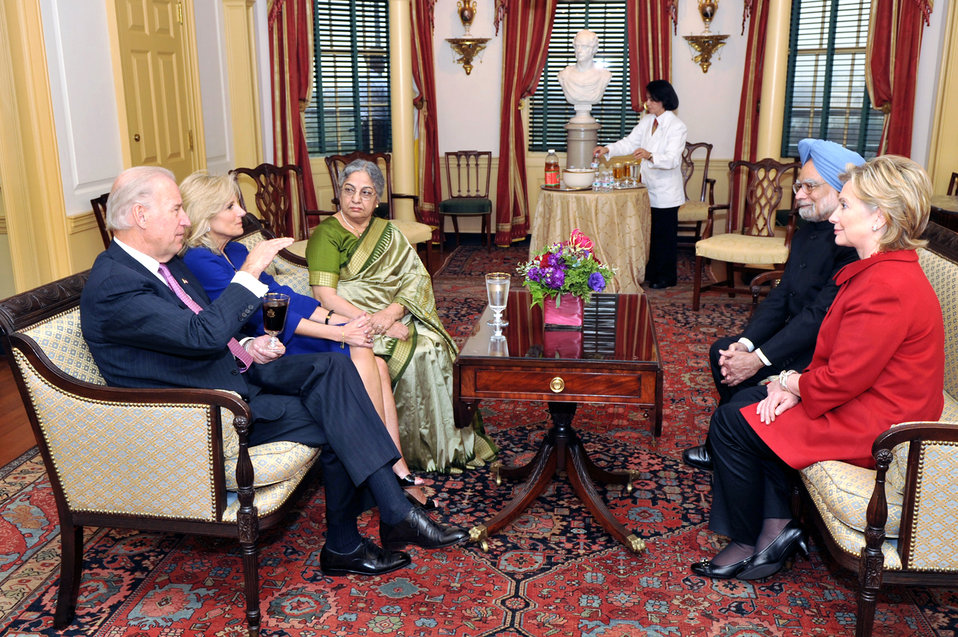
Vice-President Biden, Secretary Clinton Co-Host Social Lunch in Honor of Indian Prime Minister

U.S. Vice-President Joe Biden Dr. Jill Biden co-host a social lunch with U.S. Secretary of State Hillary Rodham Clinton in honor of Indian Prime Minister H.E. Dr. Manmohan Singh and Dr. Gurusharan Kaur at the U.S. Department of State in Washington, DC November 24, 2009.